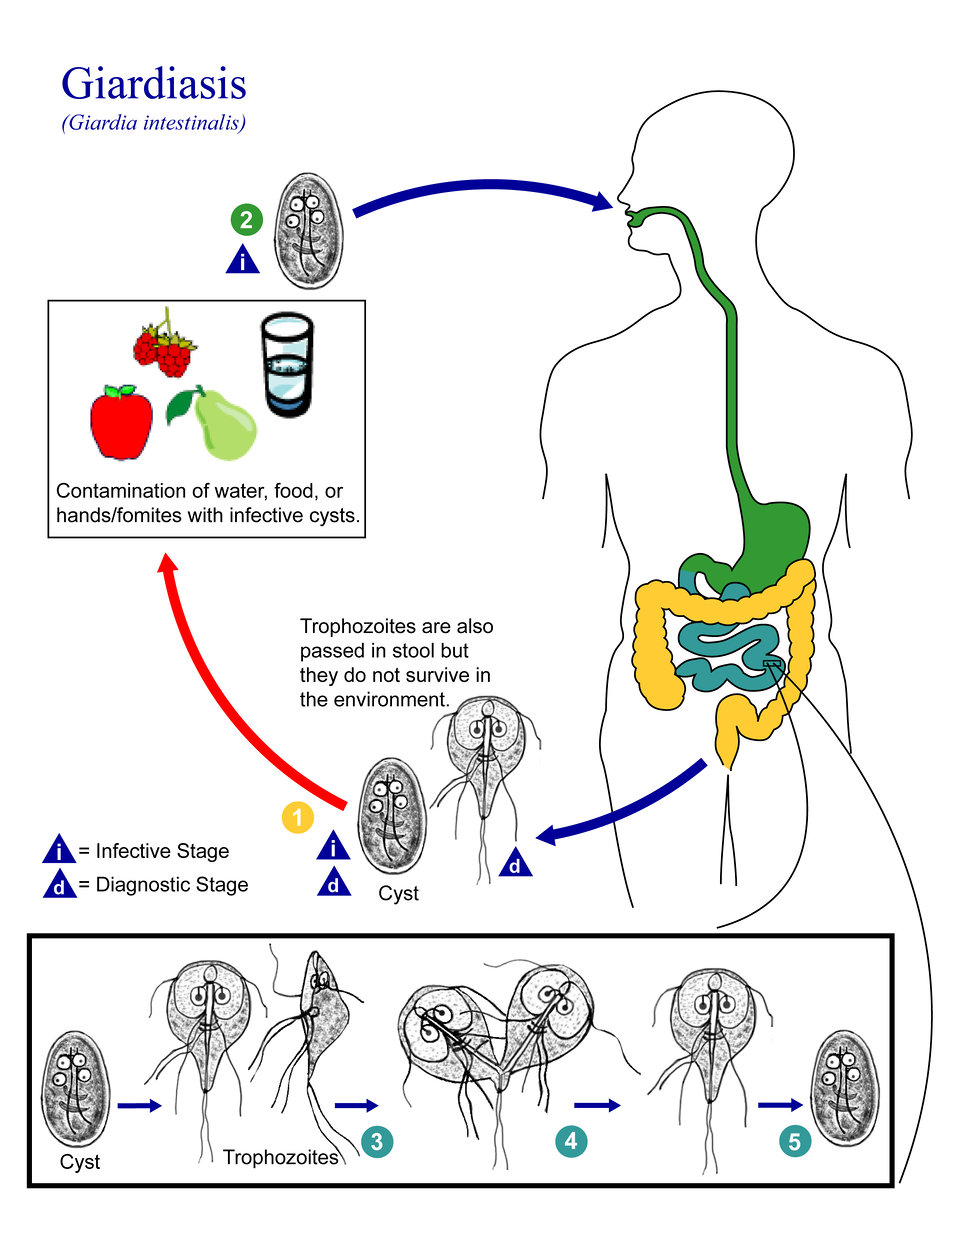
This is an illustration of the life cycle of Giardia lamblia (intestinalis), the causal agent of Giardiasis.